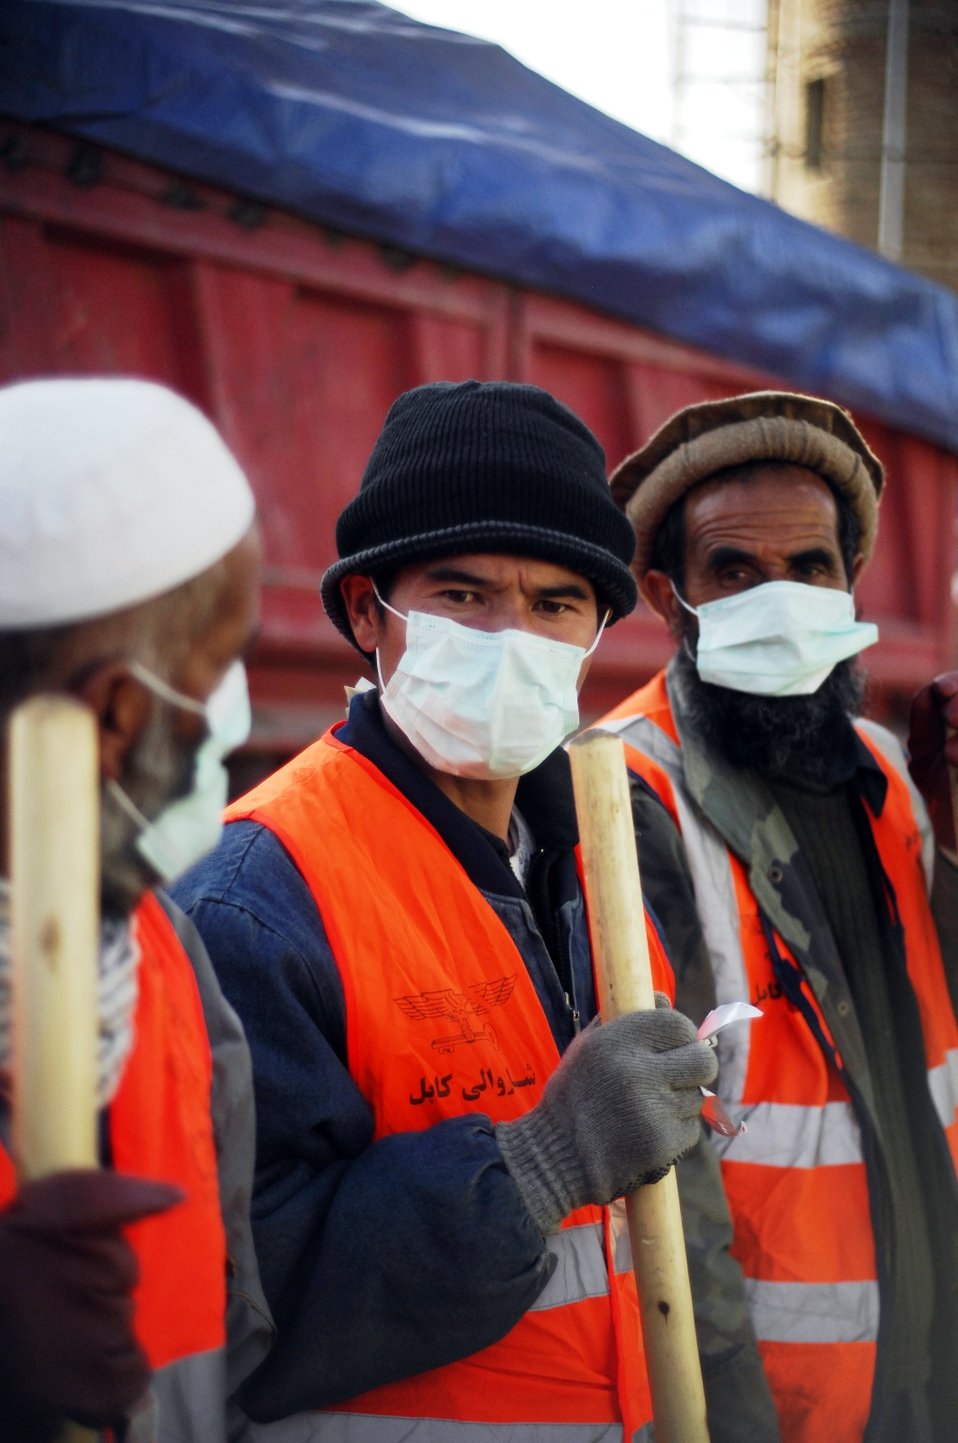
Care15